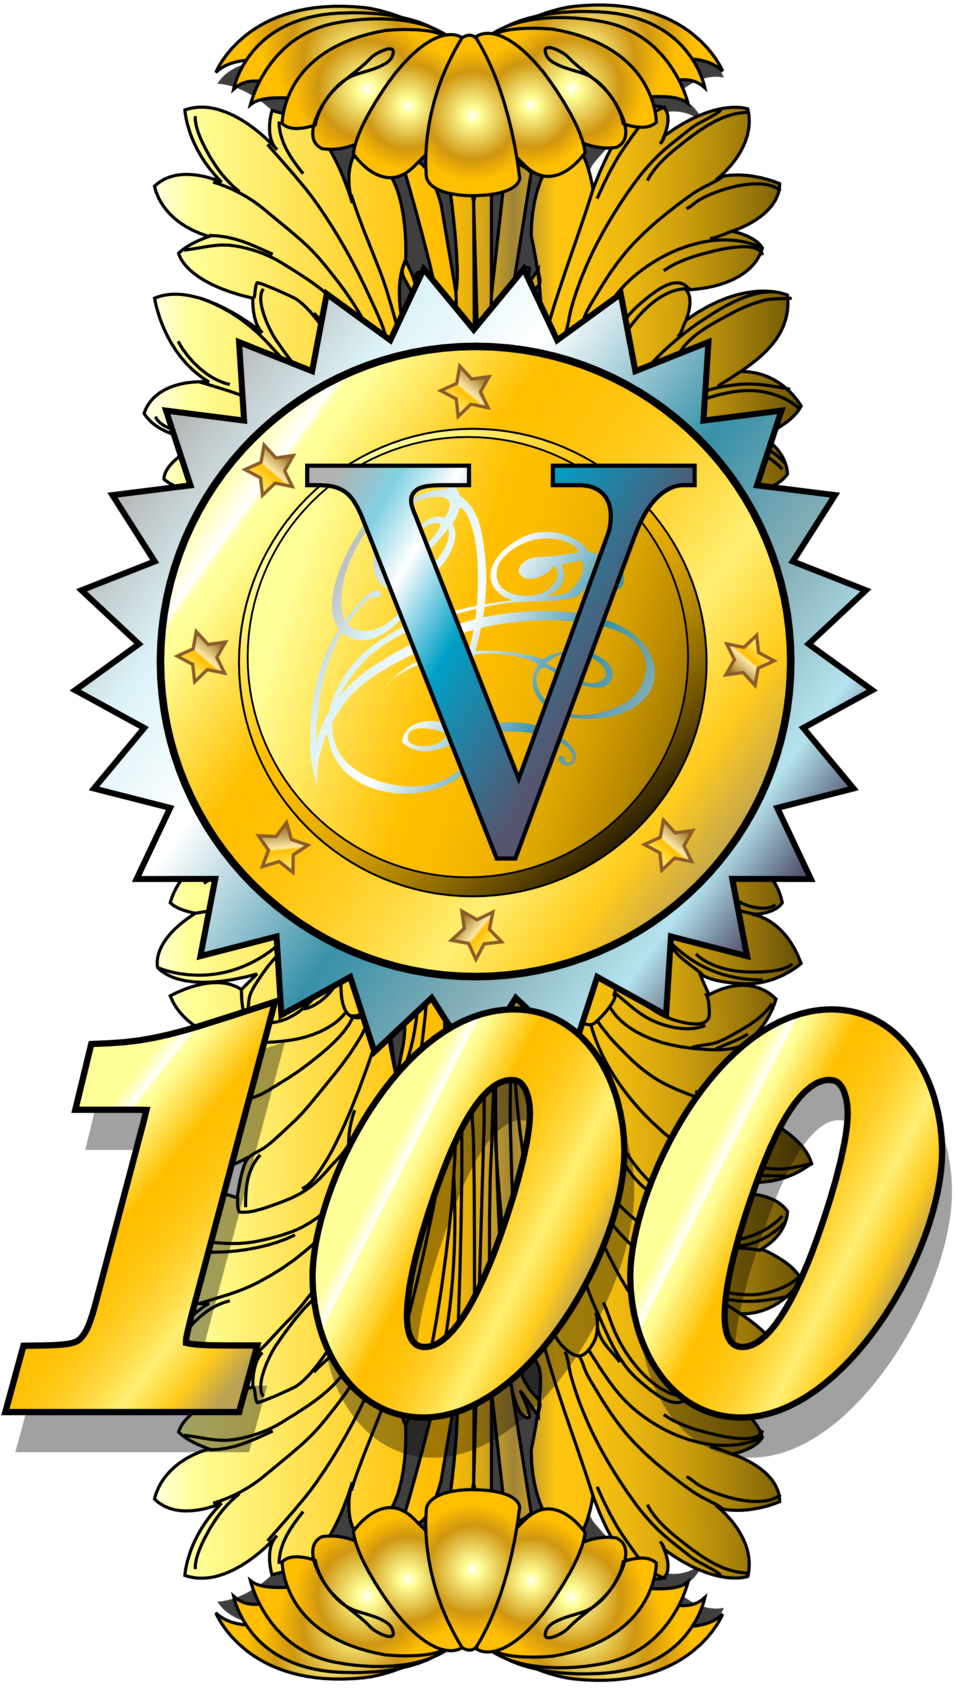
100 valued images seal